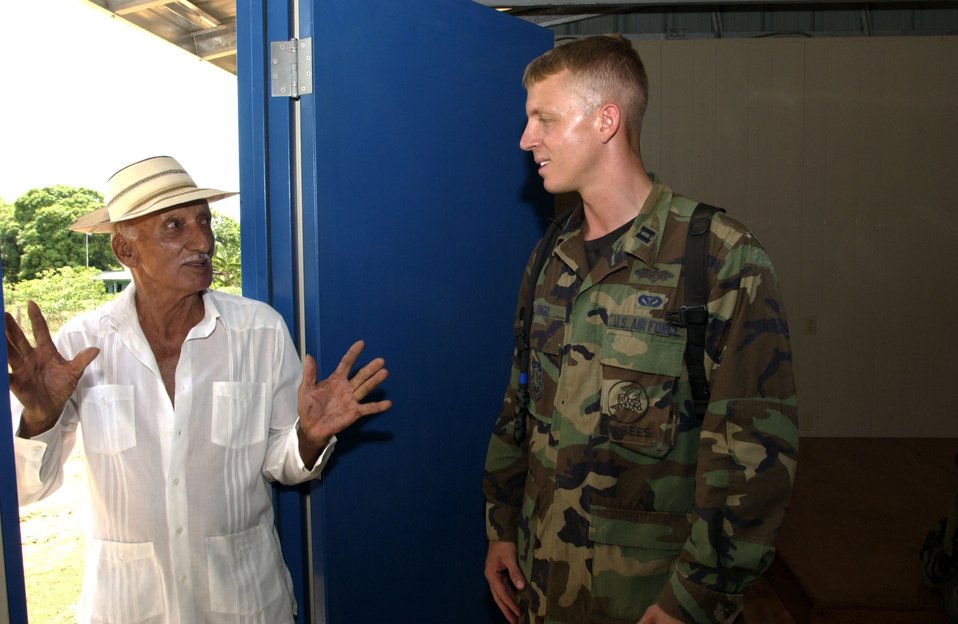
Airman engineers Seabees' construction in Panama

LLANO DE PIEDRA, Panama -- Capt. Star Longo talks with Bolivar Barria inside the community center the Seabees constructed here. Captain Longo is the commander of the U.S. Naval Mobile Construction Battalion 40 (Seabees) attached to Joint Task Force Armadillo. Task Force Armadillo is part of New Horizions 2005, a U.S. Southern Command sponsored annual training and humanitarian exercise. Captain Longo is on a two-year exchange program with the Seabees.